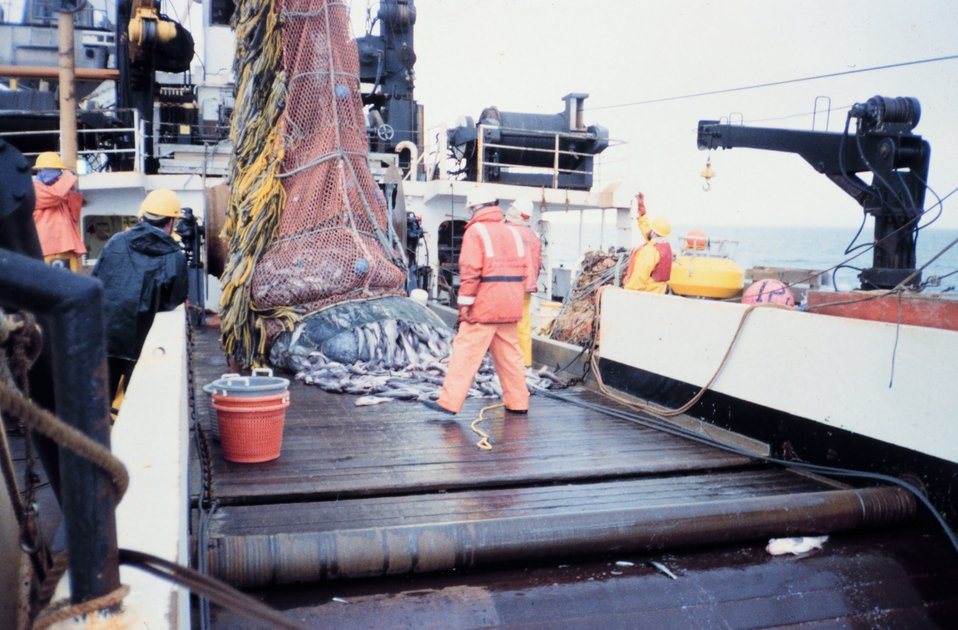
Emptying cod end of trawl on deck to ready catch for sorting and sampling.